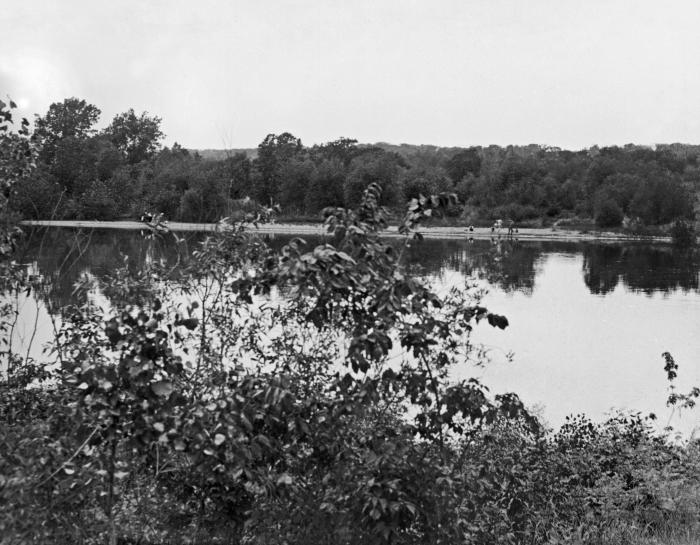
This historic photograph depicted a number of young men who were swimming in the Mississippi River below Pike Island, June 13, 1933. It was taken during a Minnesota Department of Health study of the public bathing and recreation areas along the river.